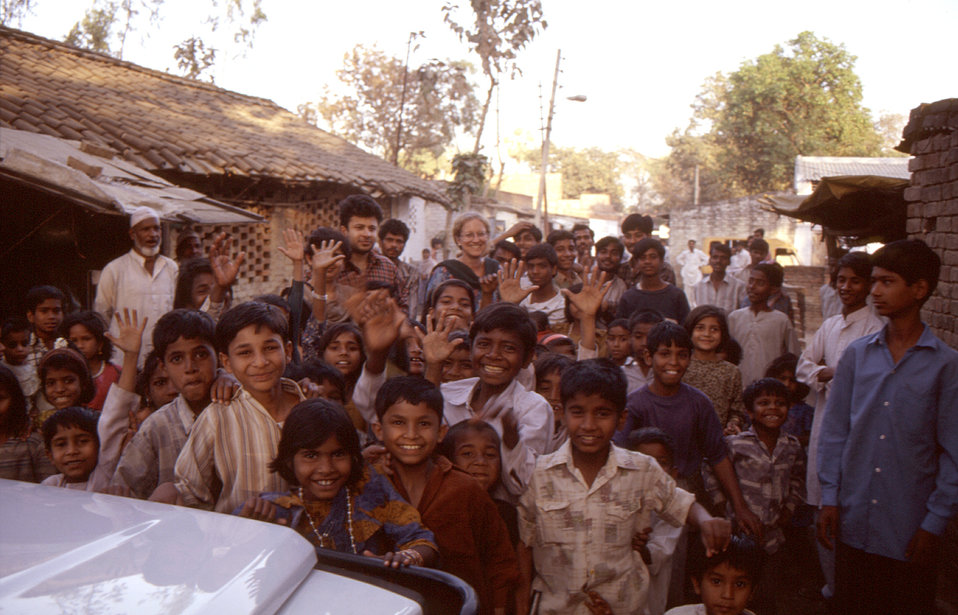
This 2000 image depicted a crowd of villagers who'd emerged when the Stop Transmission of Polio (STOP) team vehicle arrived in their community. Everyone was curious about visitors, and the gathering was used as a terrific opportunity to promote the administration of the polio vaccine to the young and old alike. The photograph was provided by Chris Zahniser, B.S.N., R.N., M.P.H., also a STOP team member and photographer, assigned to the state of Uttar Pradesh in northern India. Chris spent three months working in the Districts of Gorakhpur and Deoria.